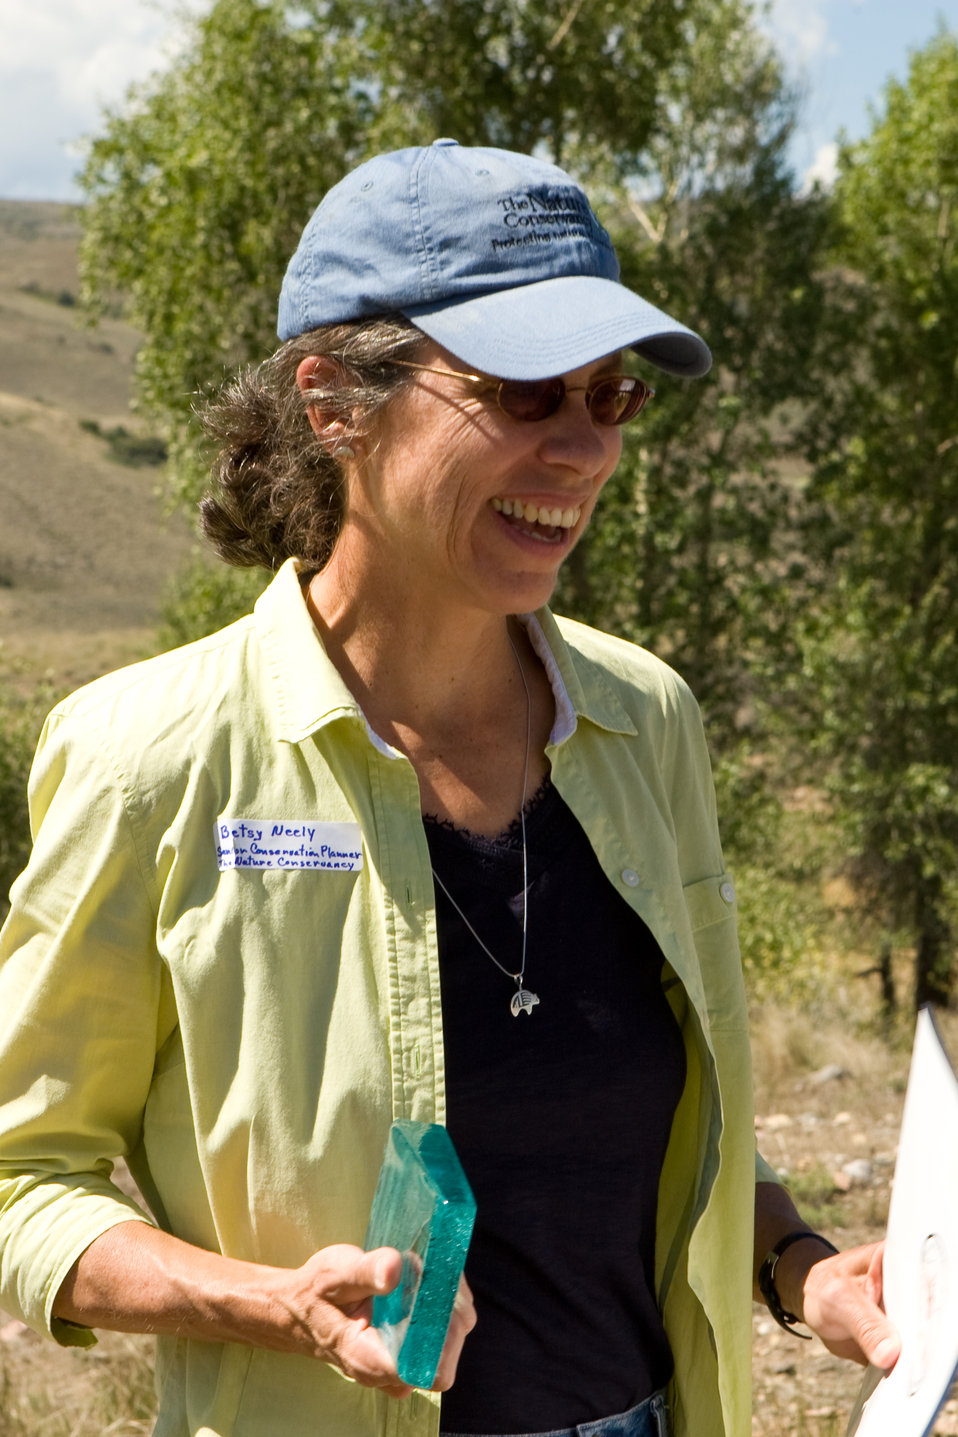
Colorado Rare Plant Conservation Initiative

The Colorado Rare Plant Conservation Initiative (RPCI) is a partnership of 23 statewide and regional agencies, private organizations, and academic institutions working to conserve 121 rare plants in Colorado. As part of these efforts the group developed the Colorado Rare Plant Conservation Strategy, developed Best Management Practices to reduce energy development impacts, addressed climate change, and developed focused strategies for the conservation of individual species at eight priority landscapes. The group has also worked to coordinate volunteer efforts for plant conservation across the state.